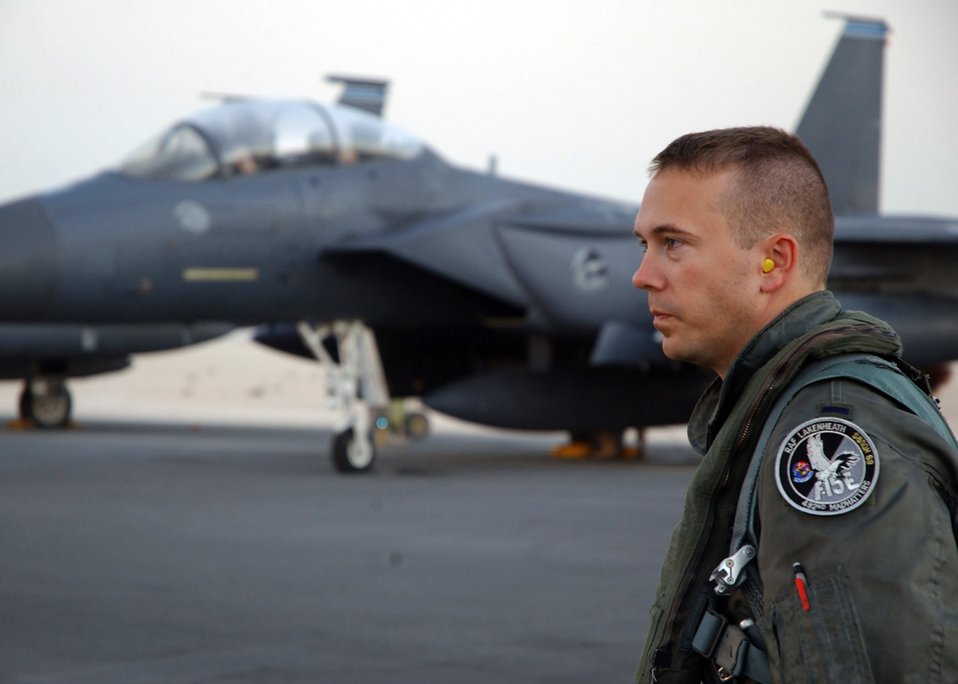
Deployed fighters

SOUTHWEST ASIA (AFPN) -- First Lt. Brian Robbins looks off to the distance as he reflects on his time spent at a deployed location. Lieutenant Robbins is a pilot assigned to the 492nd Expeditionary Fighter Squadron. The unit returned to its home station at Royal Air Force Lakenheath, England, Jan. 25.